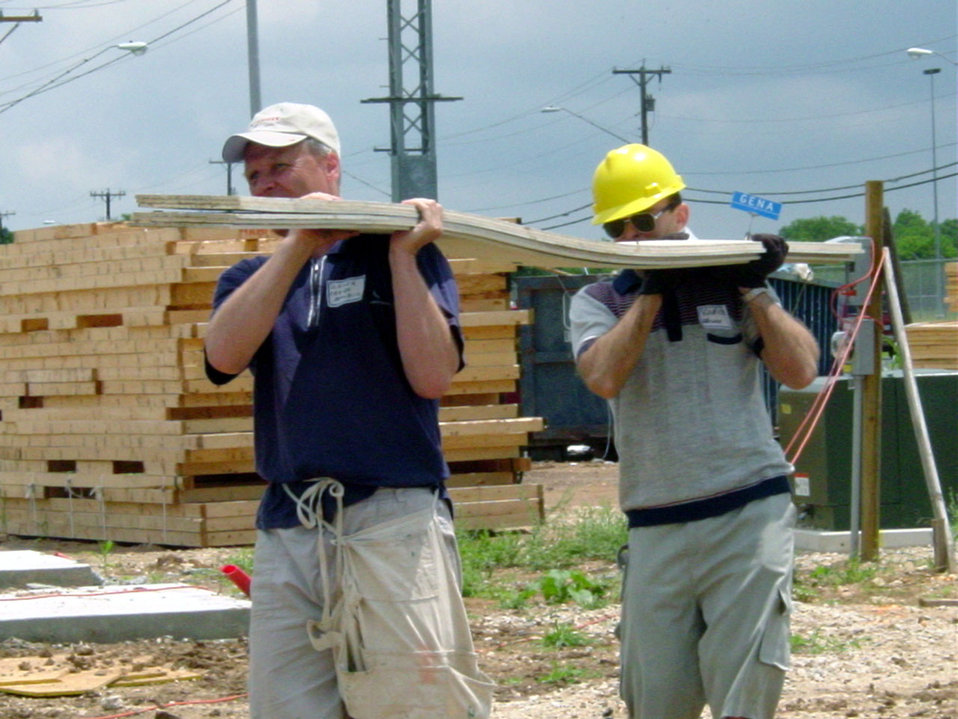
International aid

SAN ANTONIO -- Lt. Col. Bohuslav Dvorak (left) from the Czech Republic and Ukrainian Lt. Col. Vadym Holubko carry lumber at a Habitat for Humanity house site here May 8. Nine students from the Defense Language Institute at Lackland Air Force Base, Texas, took part in the project. The school's informational program lets students use their language skills by getting involved in the local community.